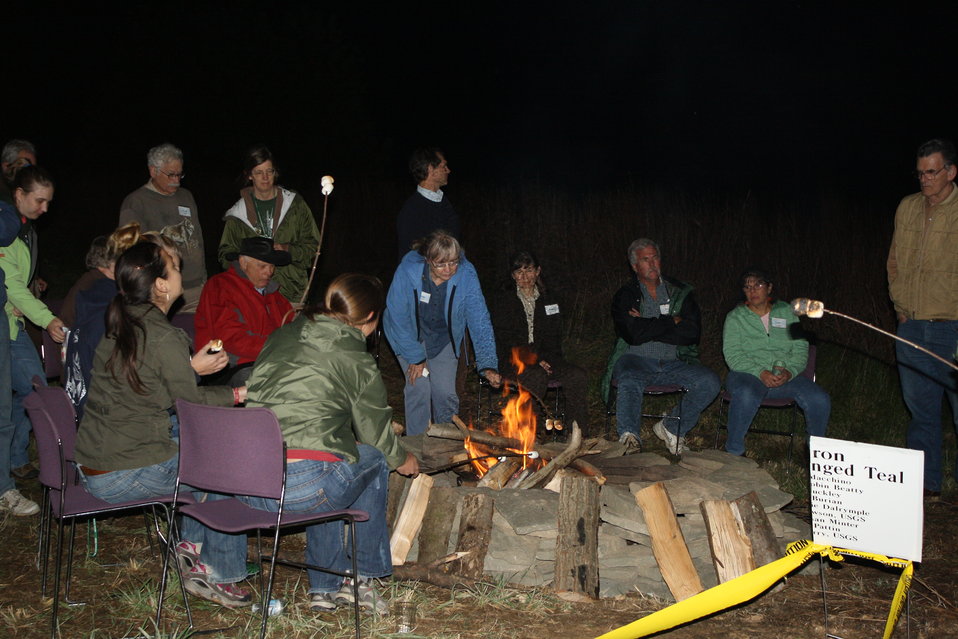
Patuxent Research Refuge 75th Anniversary

Symposium attendees told stories around a campfire.